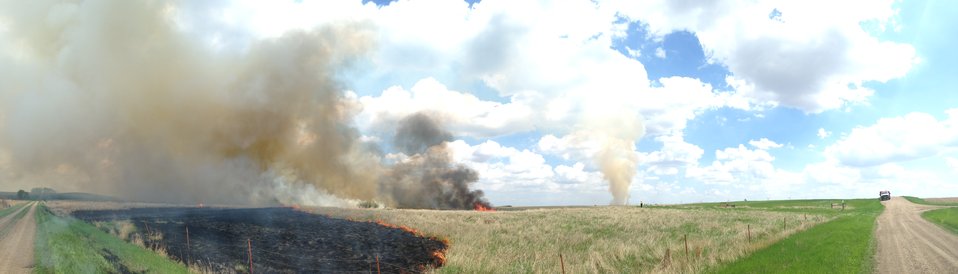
Kannowski WPA Prescribed Fire

Prescribed fire is a management tool that is used to maintain the vigor of a prairie. As with grazing, native prairie plants adapted to the frequent fires that raged across the Great Plains. These fires were historically started by lightning strikes and burned many miles of uninterrupted prairie. Fire is one of the best management tools for weakening non-native species. It removes the accumulated litter layer, stimulates new plant growth, and can be used to prepare ground for restoration.